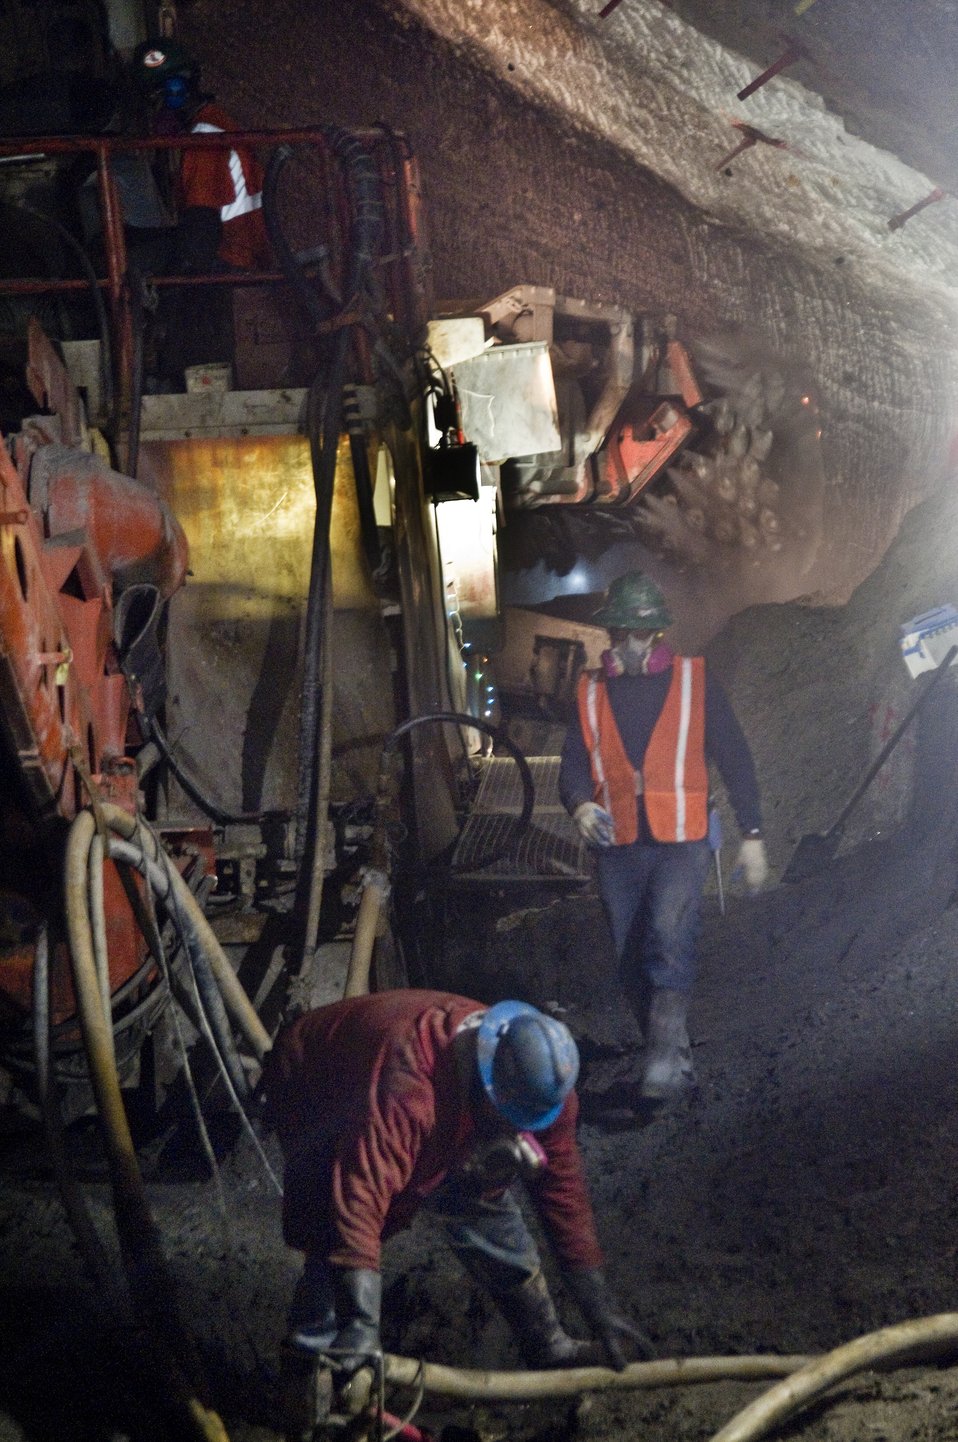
Sandhogs continuing work on the LIRR station cavern below Grand Central Terminal and approx 100 feet below street level.

The East Side Access project will connect the Long Island Rail Road’s (LIRR) Main and Port Washington lines in Queens to a new LIRR terminal beneath Grand Central Terminal in Manhattan. The new connection will increase the LIRR’s capacity into Manhattan, and dramatically shorten travel time for Long Island and eastern Queens commuters traveling to the east side of Manhattan.